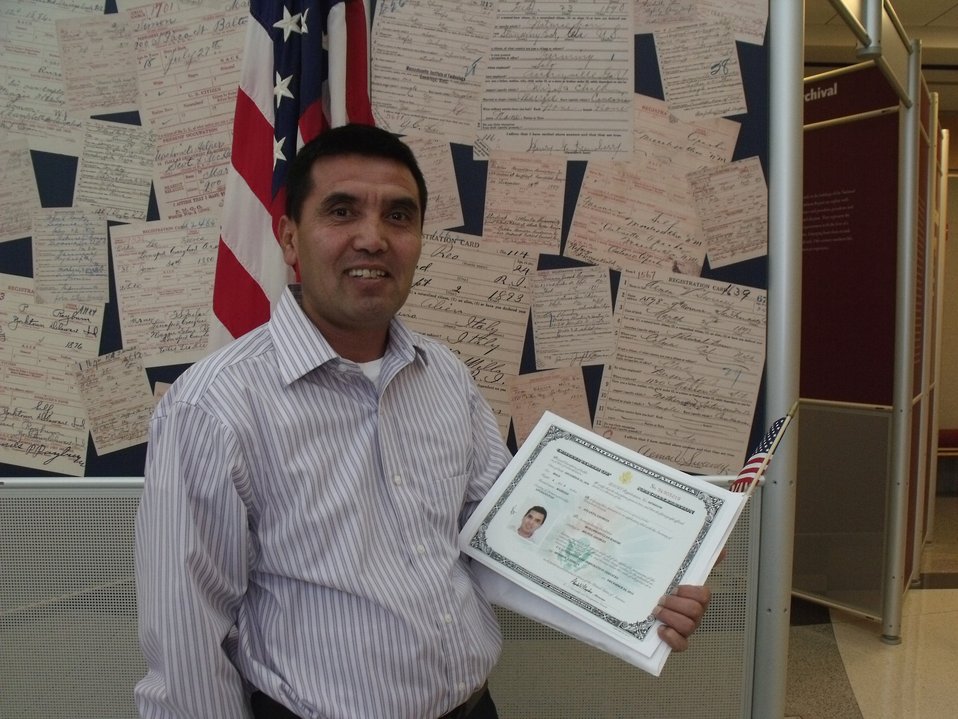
New Citizens